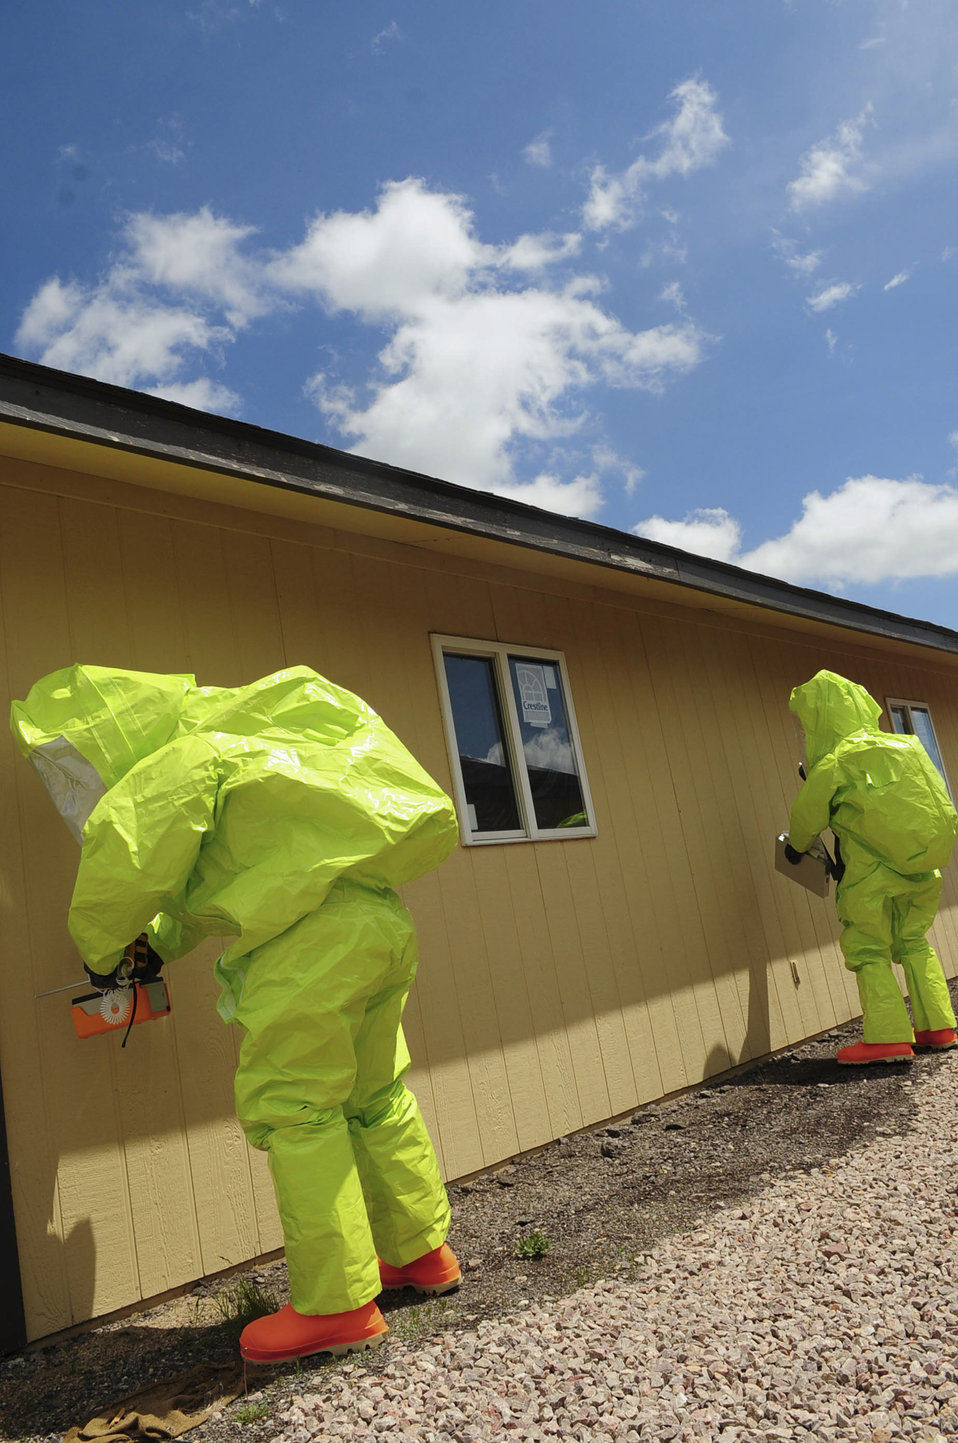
Ellsworth Airmen ready for any emergency

Airmen 1st Class David Jack (right) and Matthew Hung, 28th Civil Engineer Squadron emergency management journeymen, participate in an emergency management exercise June 3, 2010, at Ellsworth Air Force Base, S.D. The exercise maintains skills needed in chemical, biological, radiological and nuclear detection and decontamination operations as well as emergency management command and control for real world incidents.